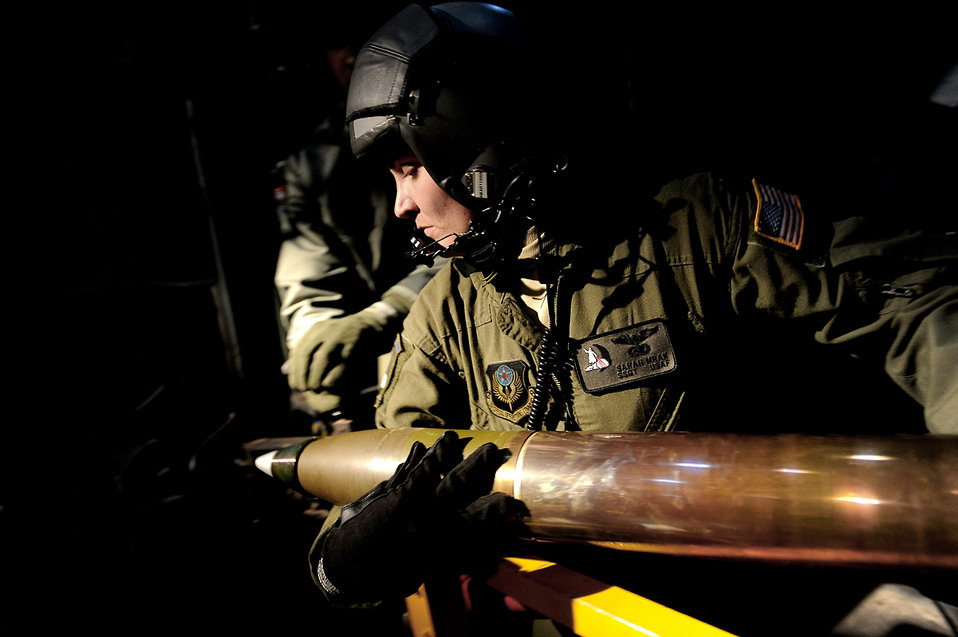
'Spooky' training

Staff Sgt. Sarah Mrak loads a 105mm gun aboard an AC-130U Spooky during a training mission Feb. 3, 2011, at Hurlburt Field, Fla. Sergeant Mrak is an AC-130U aerial gunner assigned to the 4th Special Operations Squadron.